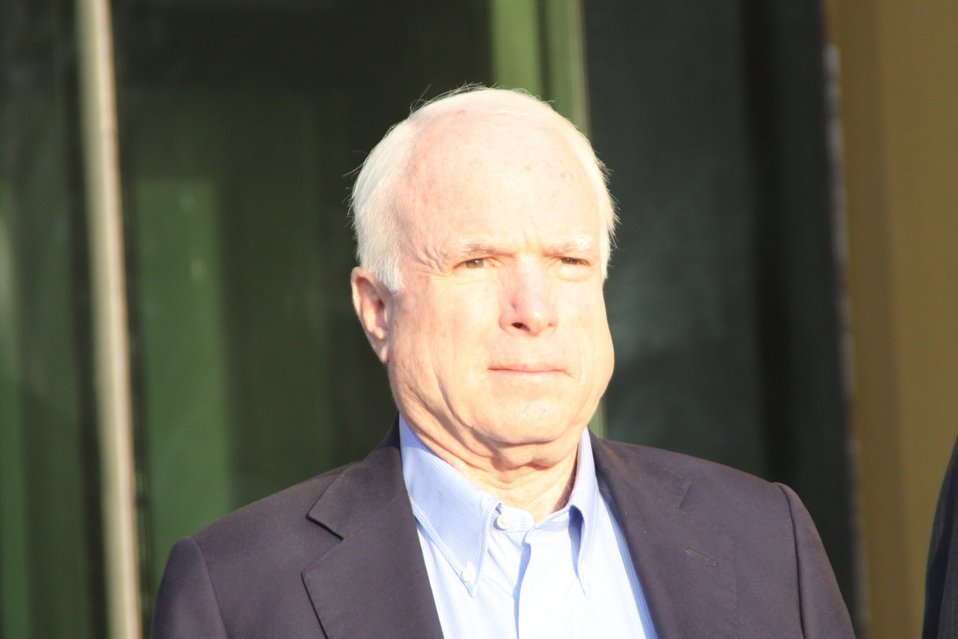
Senator McCain